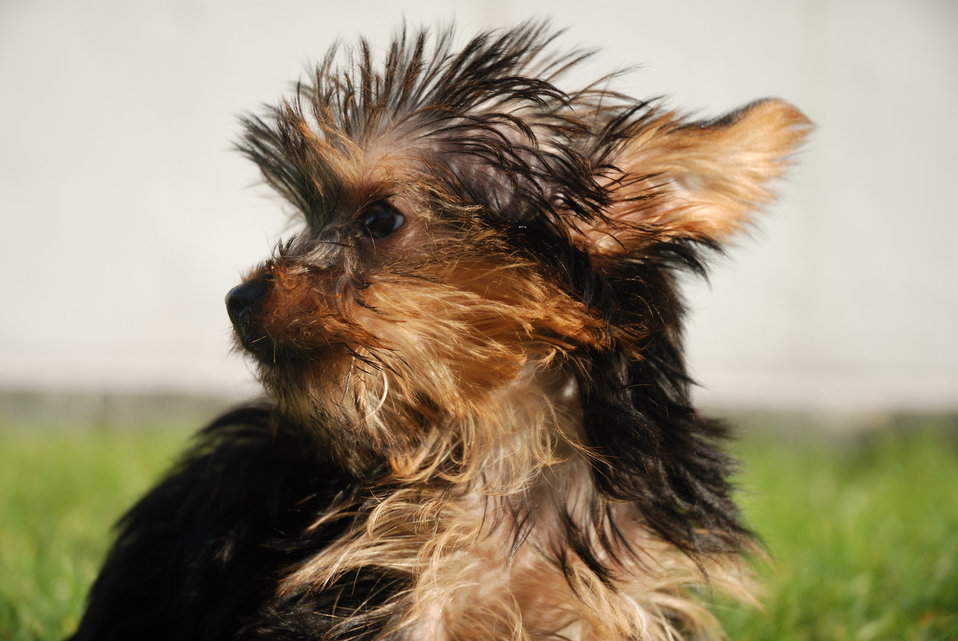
Italiano: Yorkshire Terrier.